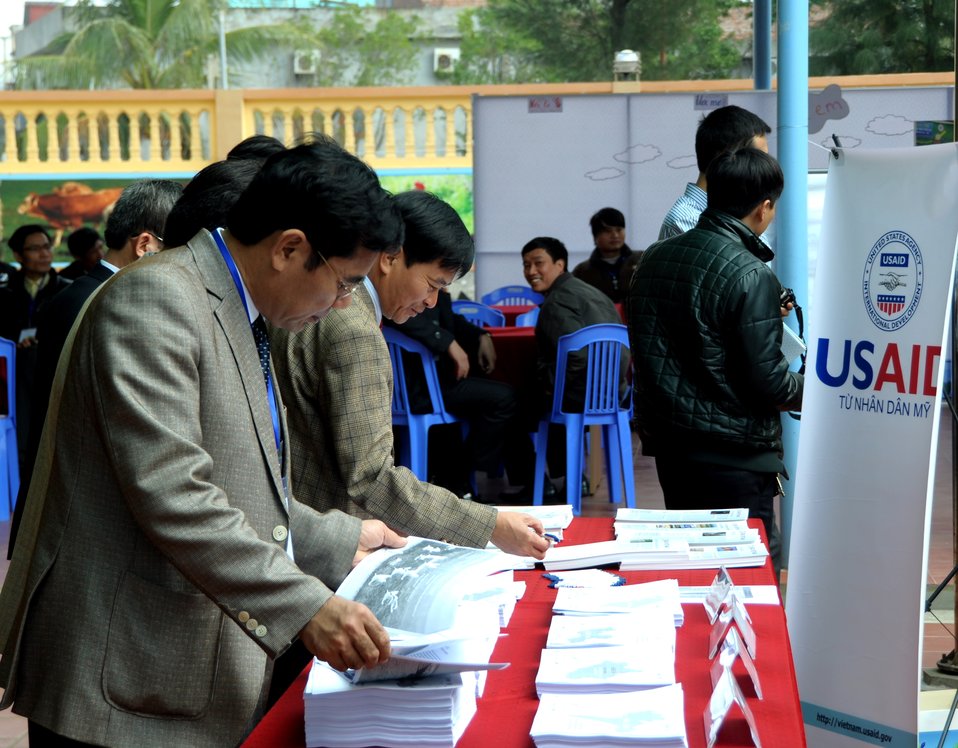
USAID launches the Vietnam Forests and Deltas project in Nam Dinh province.

Quat Lam, Nam Dinh. January 16, 2014.